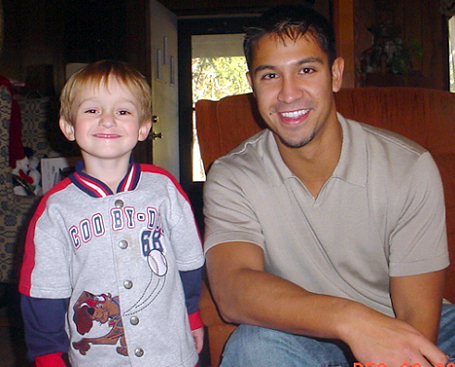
Pilot helps boy

NICEVILLE, Fla. -- Capt. James Dykas poses with Blake Henderson, 4, recently. Blake uses a picture of the captain wearing his oxygen mask to accept that he must wear a mask for nebulizer treatments. Captain Dykas is a B1-B Lancer pilot at Ellsworth Air Force Base, S.D.